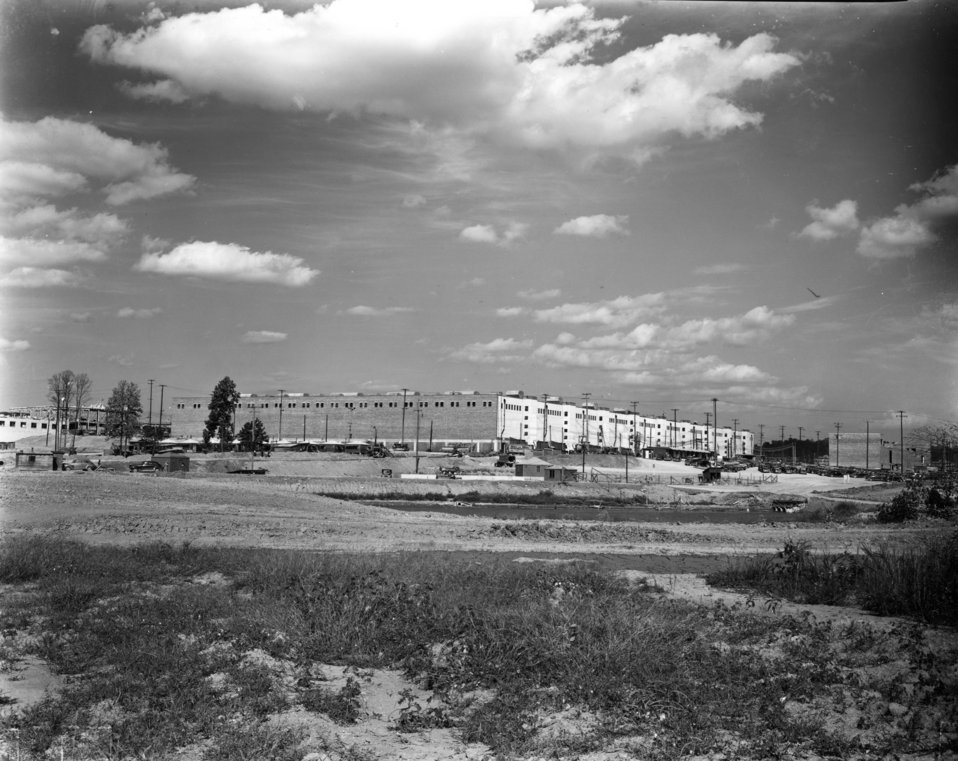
K-27 at Oak Ridge